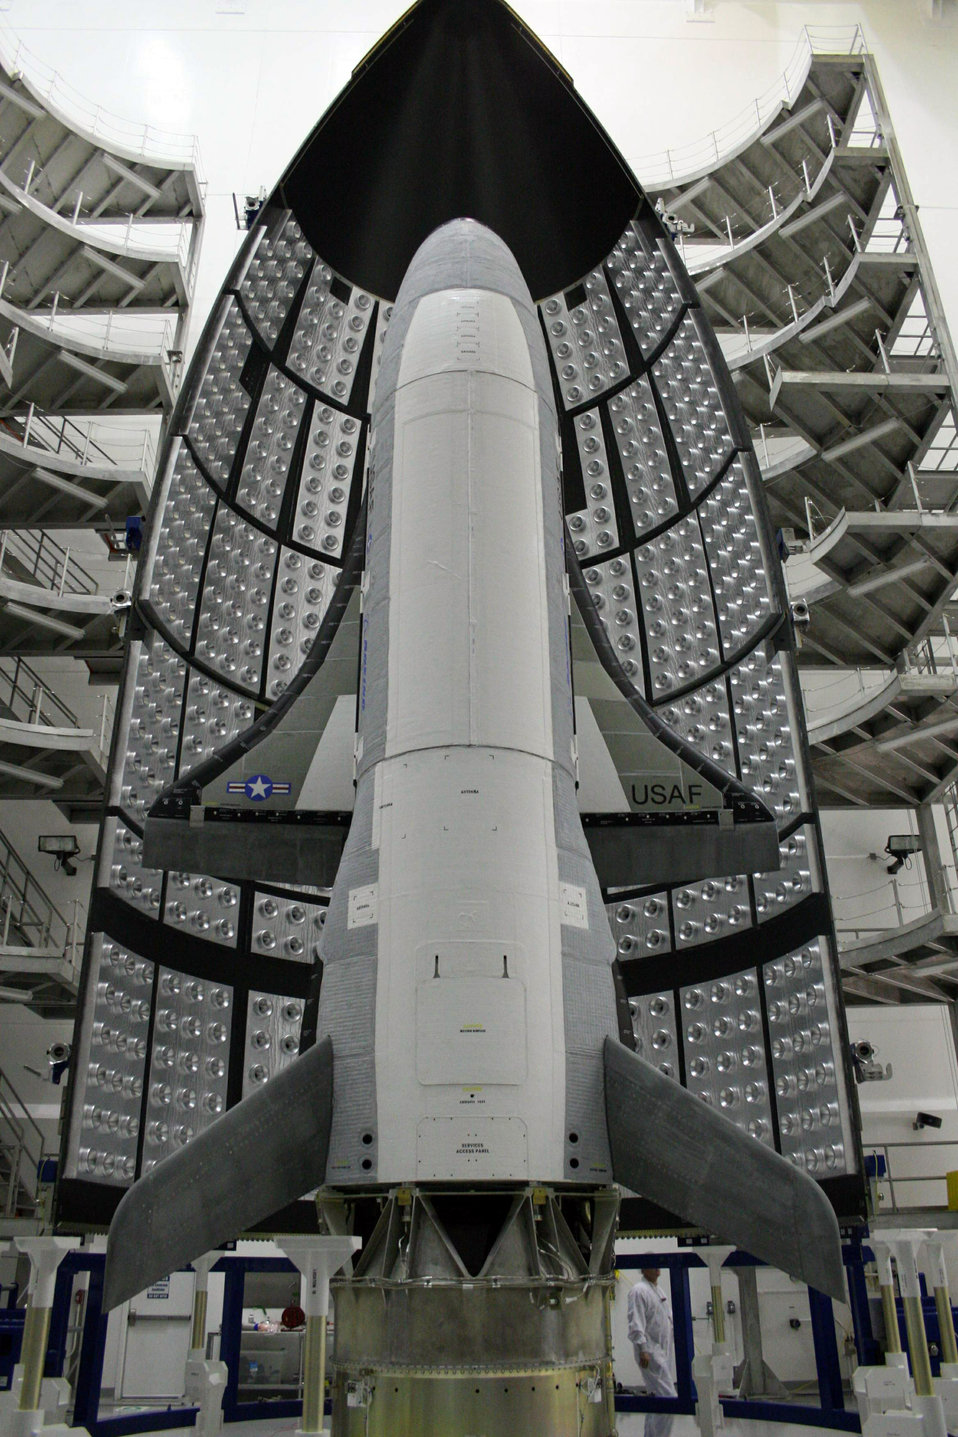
New unmanned spacecraft set to launch

The X-37B Orbital Test Vehicle in the encapsulation cell at the Astrotech facility April 2010, in Titusville, Fla. Air Force officials are scheduled to launch the X-37B April 21, 2010, at Cape Canaveral Air Station, Fla. The X-37B is the U.S.'s newest and most advanced unmanned re-entry spacecraft.